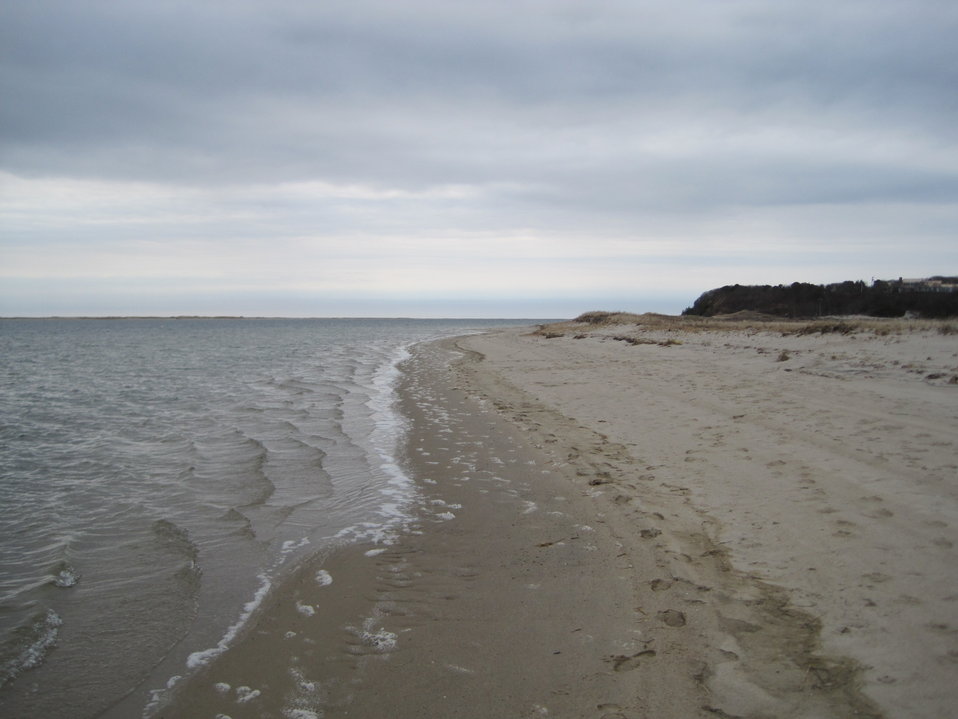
Beach at Monomoy NWR

Beach at Monomoy National Wildlife Refuge, Cape Cod, MA.